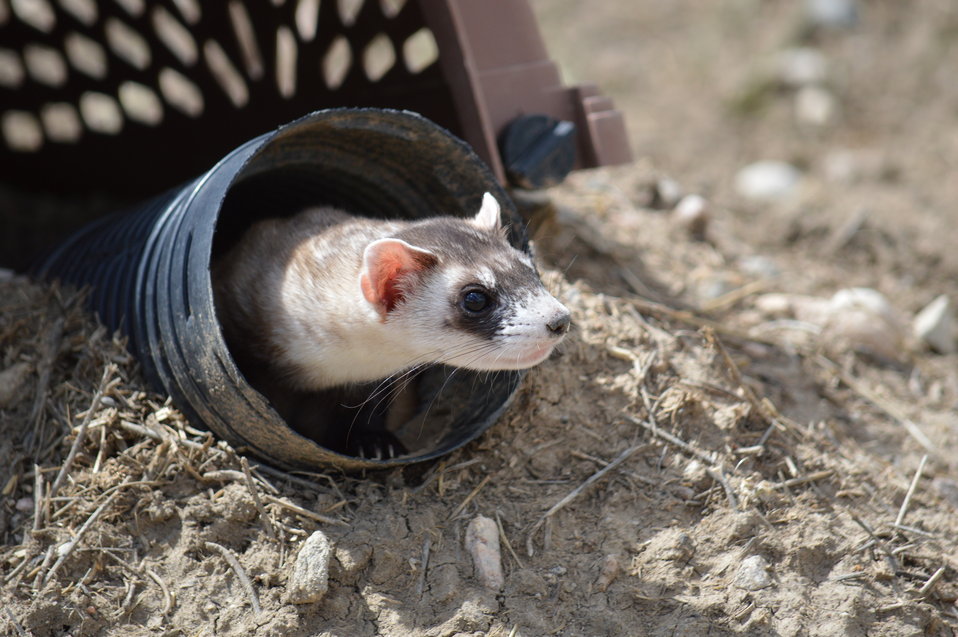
Interns visit the NBFFCC

In the summer of 2012, USFWS Region 6 interns visited the National Black-footed Ferret Conservation Center (NBFFCC) in Colorado to learn how the program reintroduces the endangered Black-footed ferret back into its native habitat.